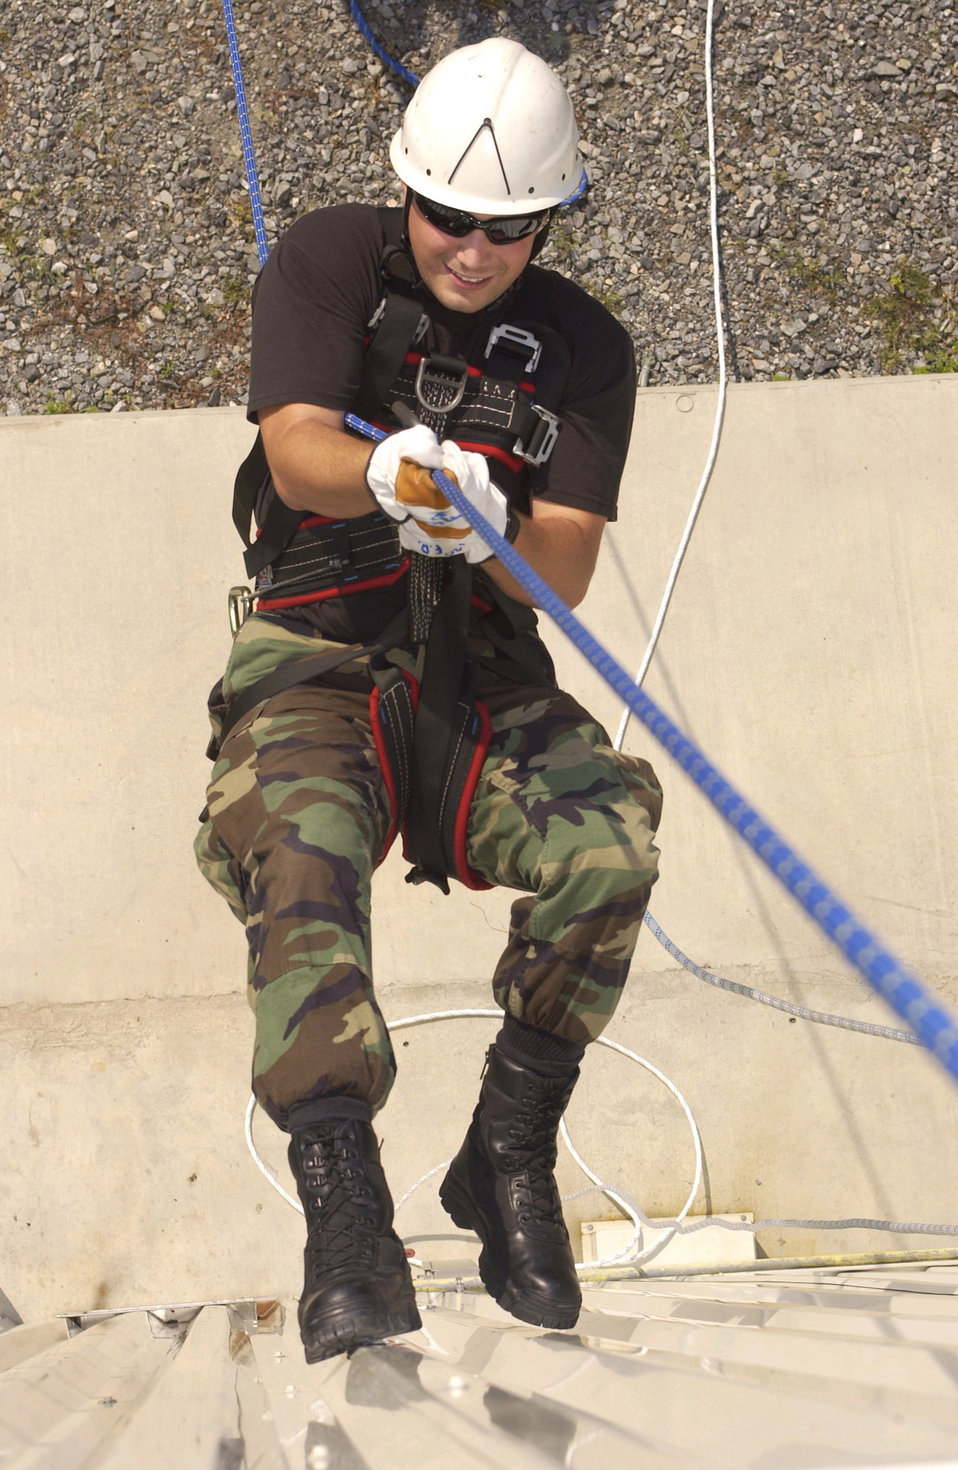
Rappeling the wall

SAVANNAH, Ga. -- A firefighter with the West Virginia Air National Guard's 130th Airlift Wing rappels down a wall here during annual training July 17.